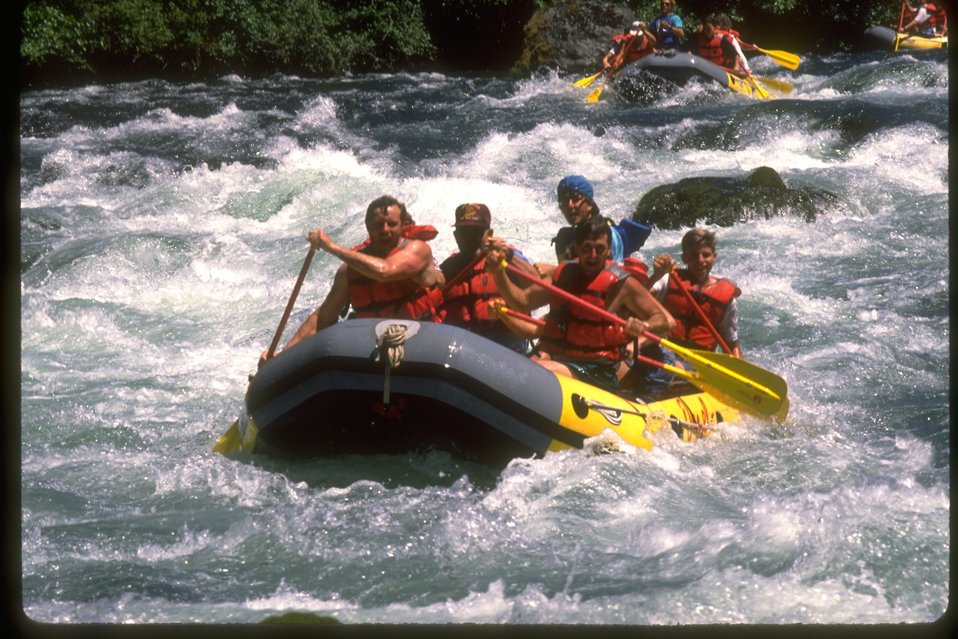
Rafting on the North Umpqua River.